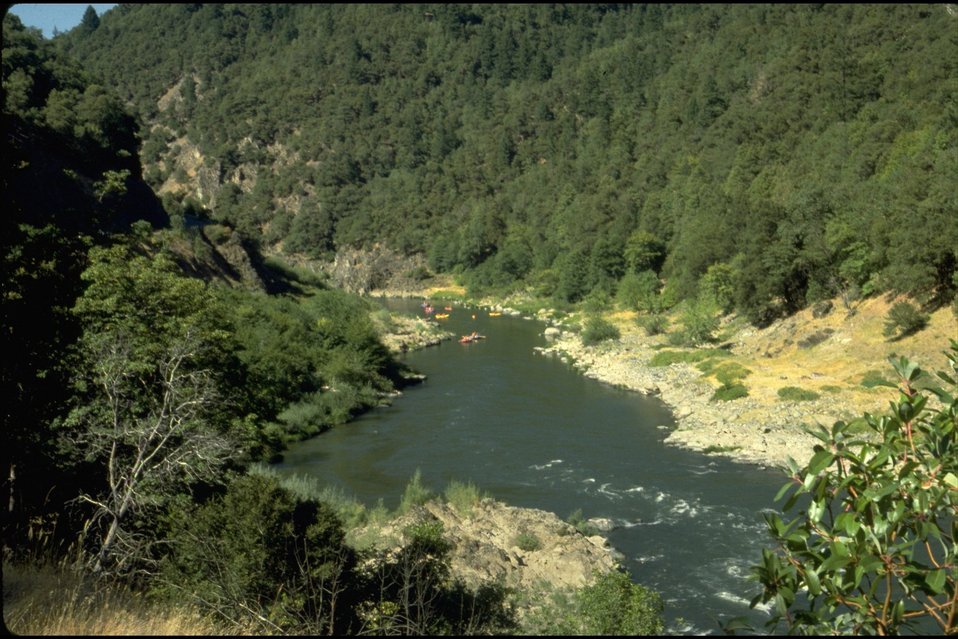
Rogue River; Canyon upriver from Argo Hellgate Recreation Area.